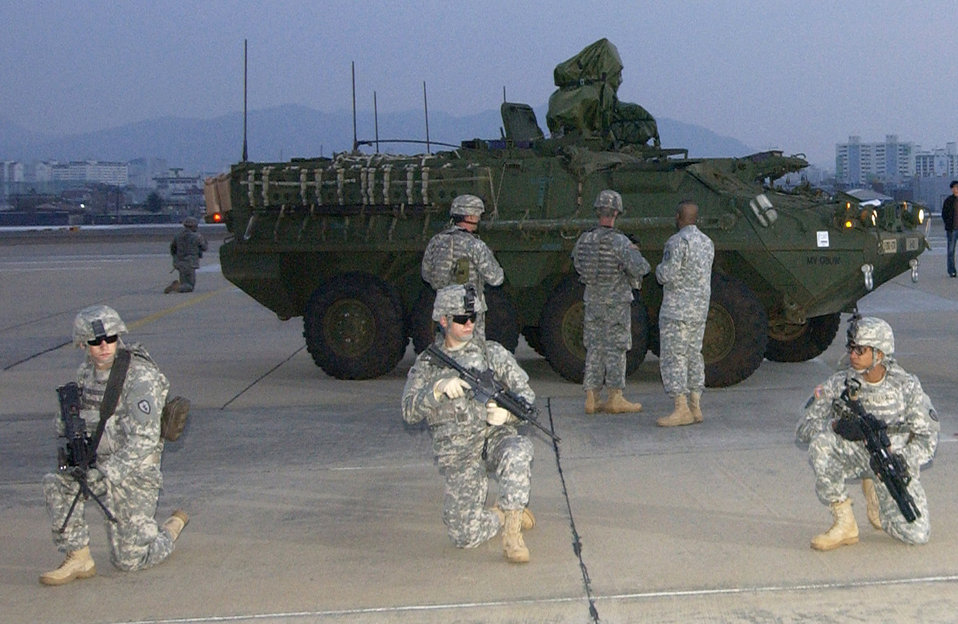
Globemaster delivers to Foal Eagle 2007

Soldiers from the 27th Infantry Division provide security for an M1126 Stryker infantry carrier vehicle that had just been offloaded from a C-17 Globemaster III March 18 in Daegu, South Korea, for Exercise Foal Eagle 2007. The focus of the exercise is on strategic, operational and tactical aspects of general military operations in the Korean theater of operations. Its intent is to demonstrate resolve to support the Republic of Korea against external aggression while improving ROK - U.S. combat readiness and joint and combined interoperability. The C-17 is from the 15th Airlift Wing at Hickam Air Force Base, Hawaii.